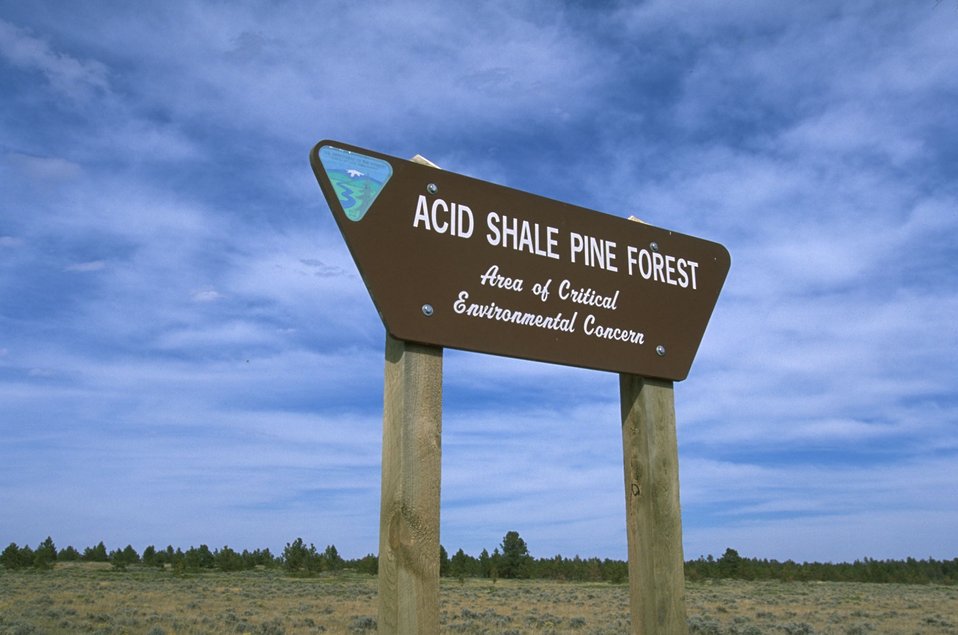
Acid Shale Area of Critical Environmental Concern (ACEC) sign